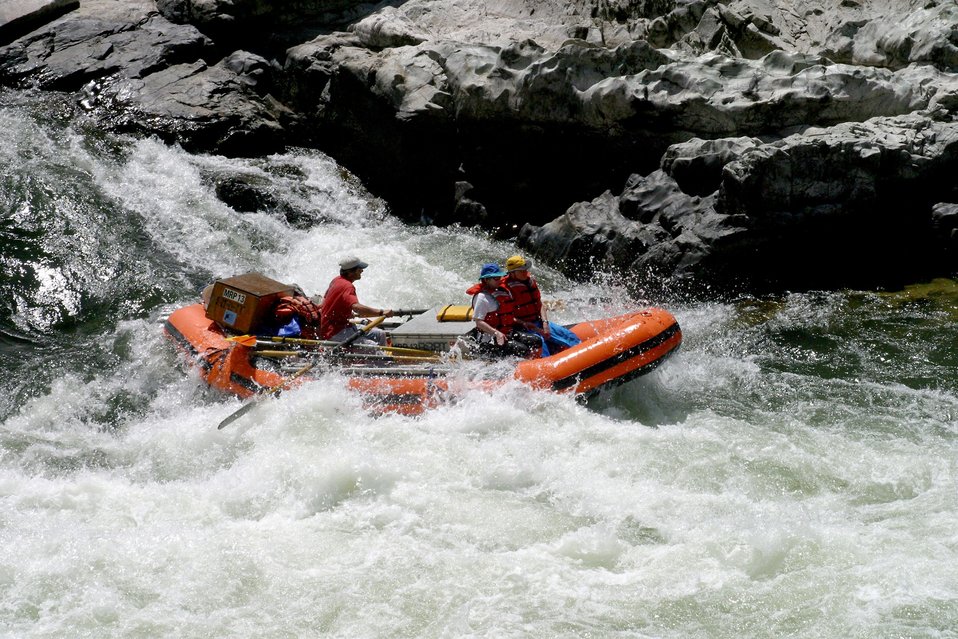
Boater at Grave Creek Falls